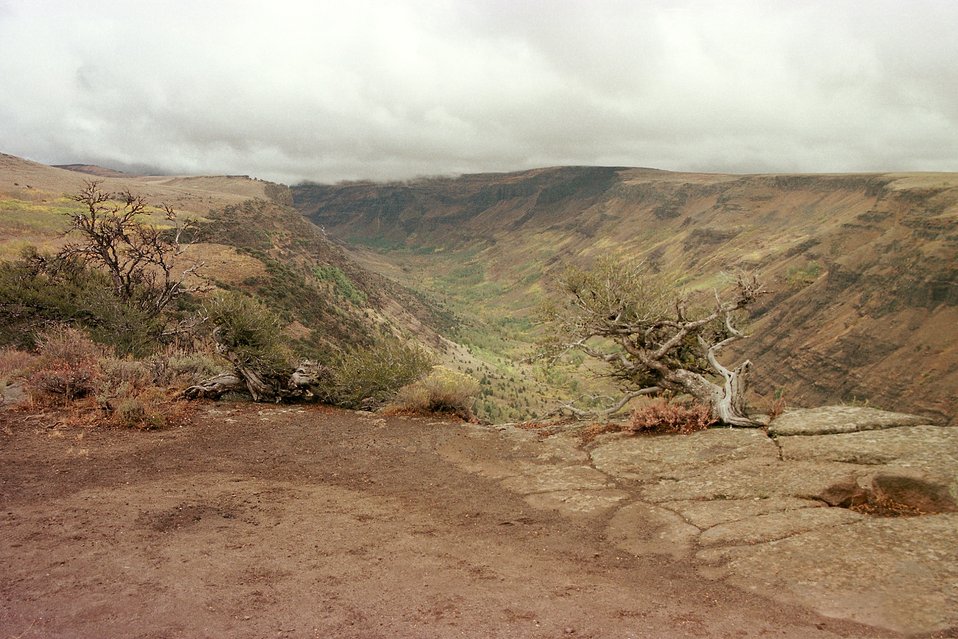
Fish Lake at Steen's Mountain.